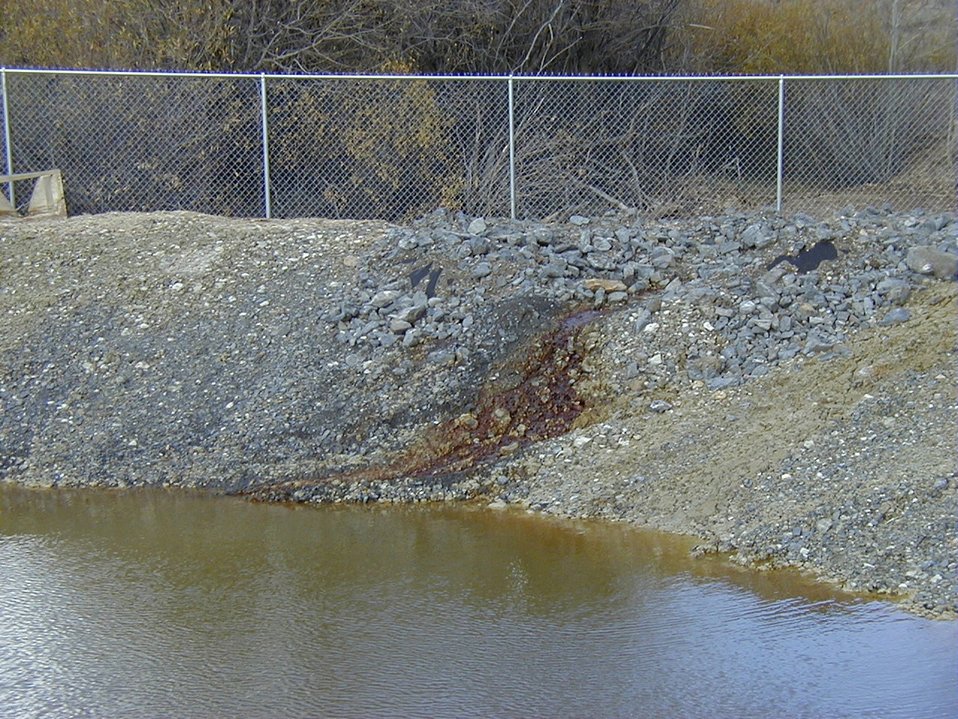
Champagne Creek, Pond 1 of Bio-Reactor Southeast Idaho Upper Snake River District